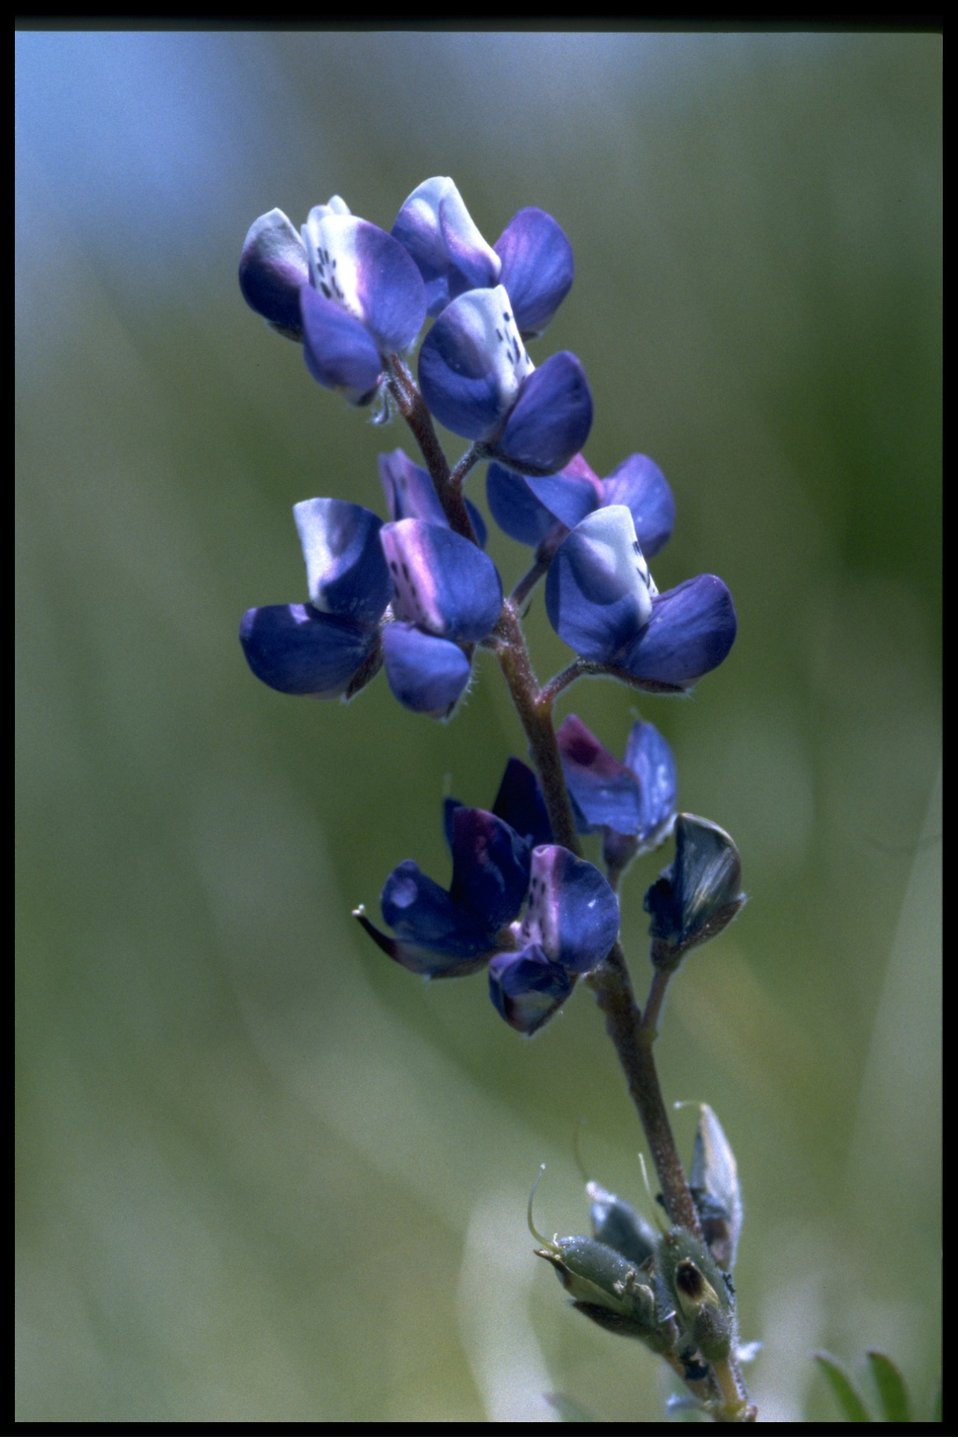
Closeup shot of Lupinus bicolor.